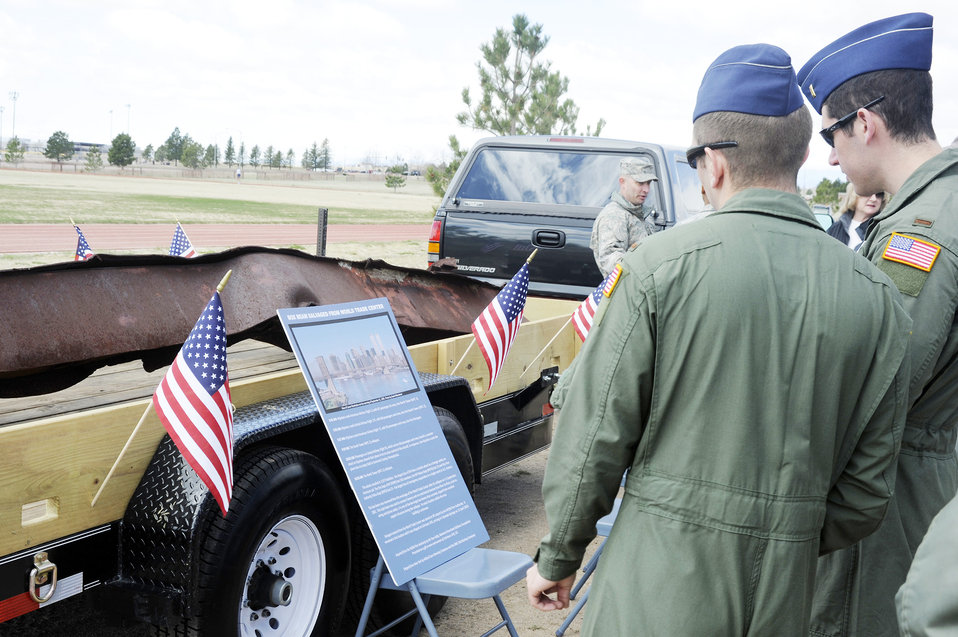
Future memorial for Schriever

Airmen view a beam from one of the collapsed towers of the World Trade Center after it arrived April 26, 2010, at Schriever Air Force Base, Colo.